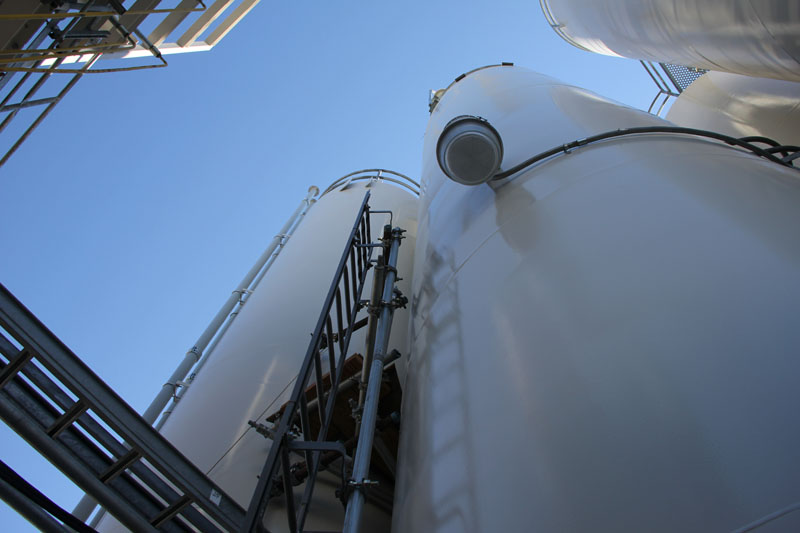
Looking up at the glass former silos that will hold glass forming agents that will be mixed with waste